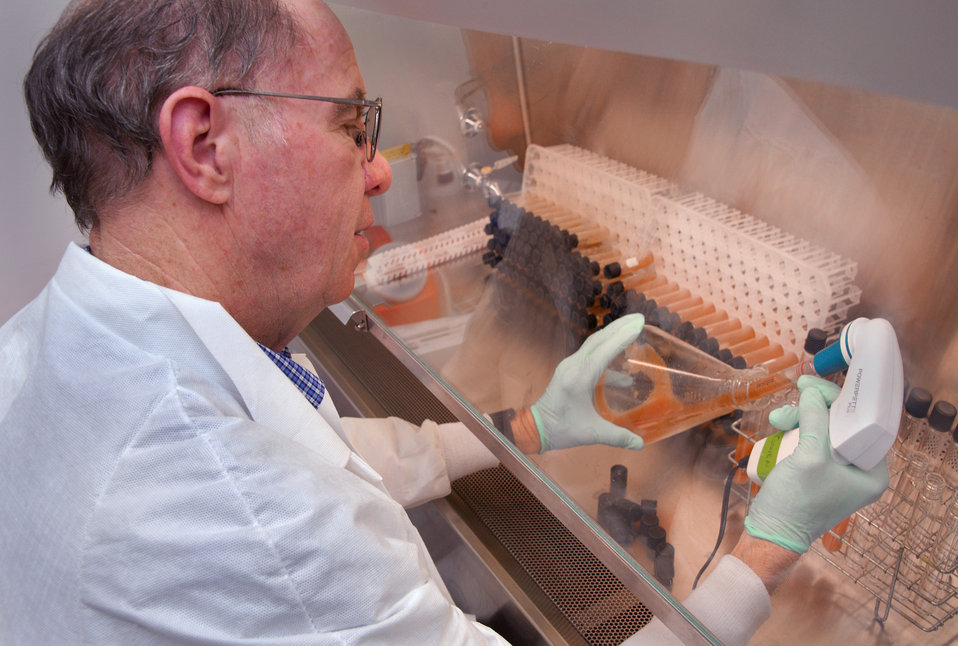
This image shows Centers for Disease Control and Prevention (CDC) scientist Steven Hurst preparing tubes for inoculation of material suspected of containing fungal organisms during the 2012 multistate fungal meningitis outbreak investigation.